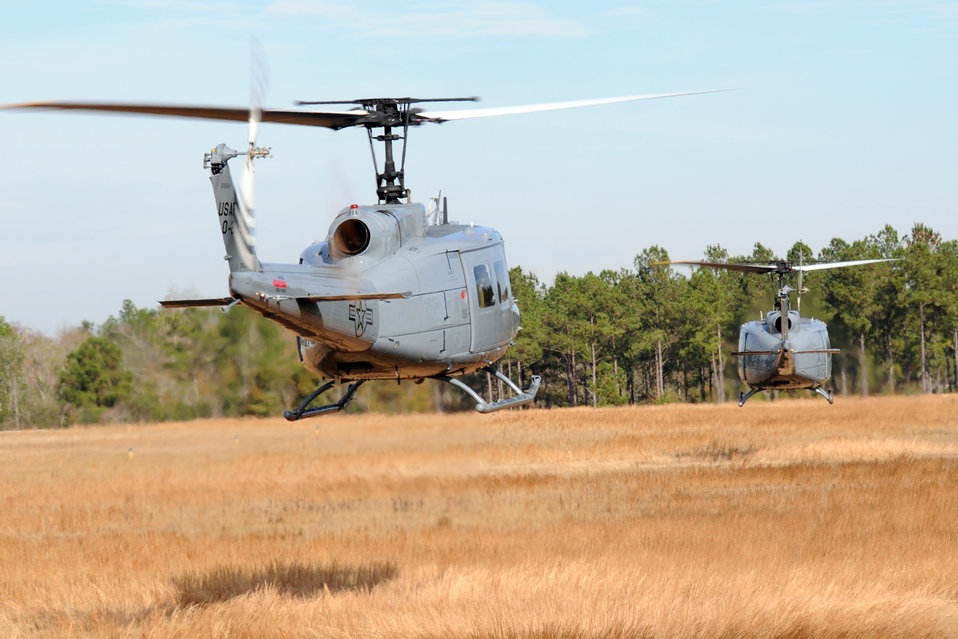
Helicopter training

Students from the 23rd Flying Training Squadron at Fort Rucker, Ala., piloting UH-1H Iroquois helicopters, practice landing during formation-flight patterns. The 23rd FTS is the third and final phase of undergraduate pilot training before the student pilots can obtain their wings. It is the Air Force's primary source of helicopter pilot training for special operations, combat search and rescue, missile support and distinguished visitor airlift missions.